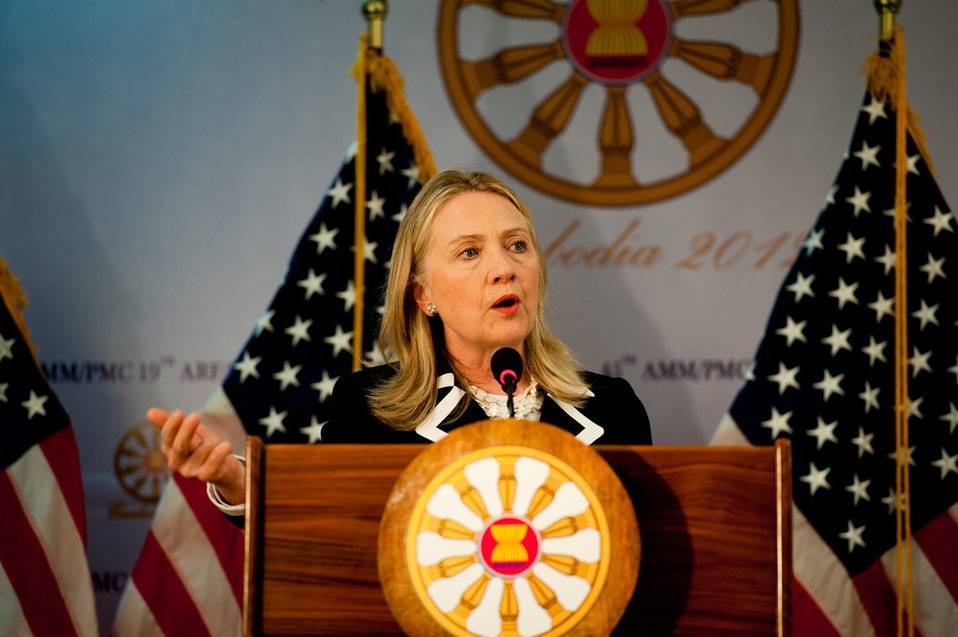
Secretary Clinton Addresses the Press

U.S. Secretary of State Hillary Rodham Clinton addresses the press in Phnom Penh, Cambodia, on July 12, 2012.